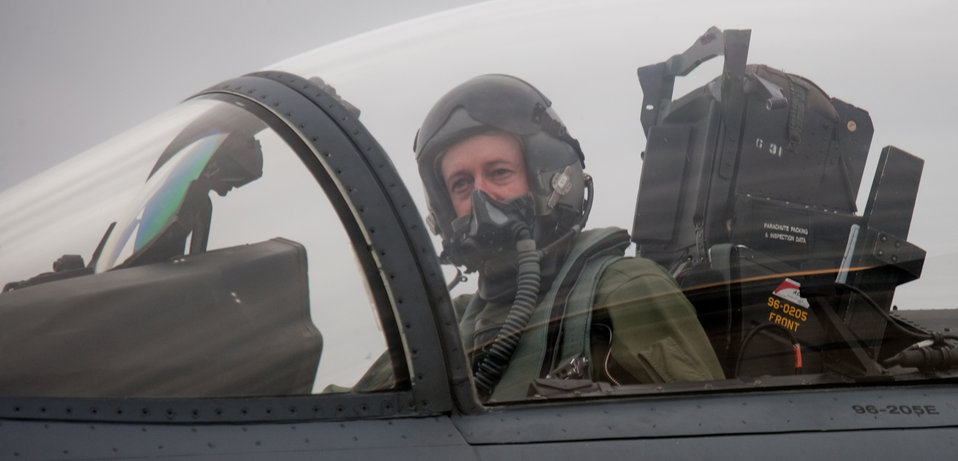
F-15E pilot strikes 4,000 hours

Pilot Lt. Col. David Iverson with the 492nd Fighter Squadron completes engine shutdown procedures for his F-15E Strike Eagle after arriving at Lackland Air Force Base, Texas, Jan. 11, 2010. Colonel Iverson passed 4,000 flight hours during the flight from Royal Air Force Lakenheath, England. The exact moment he passed the milestone was while his aircraft was being refueled by a KC-135 Stratotanker.